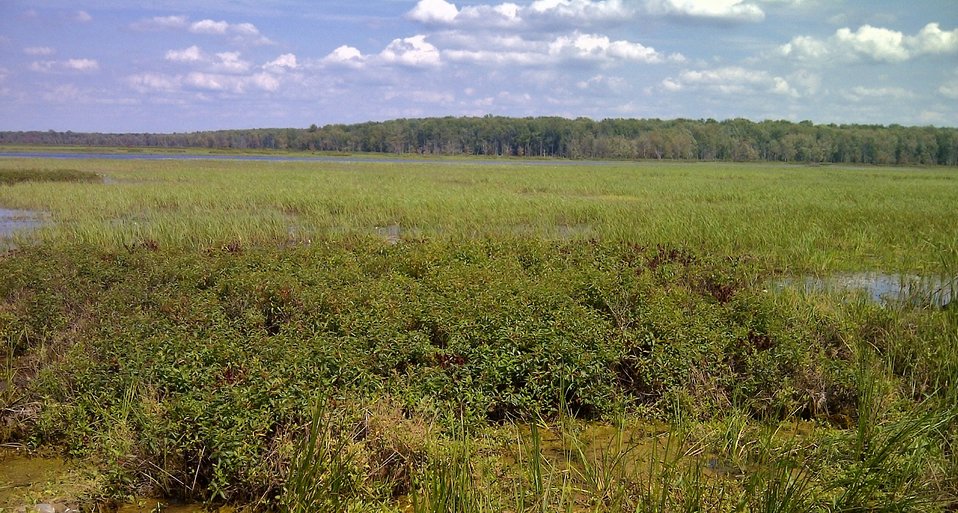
Cabot-Clark Marsh

Cabot Clark Marsh at Missisquoi National Wildlife Refuge